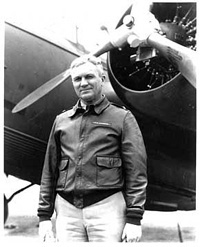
Gen. Frank M. Andrews

Newly appointed as a temporary brigadier general, Frank M. Andrews stands in front of a Martin B-12 bomber at Langley Field, Va., in March 1935. .